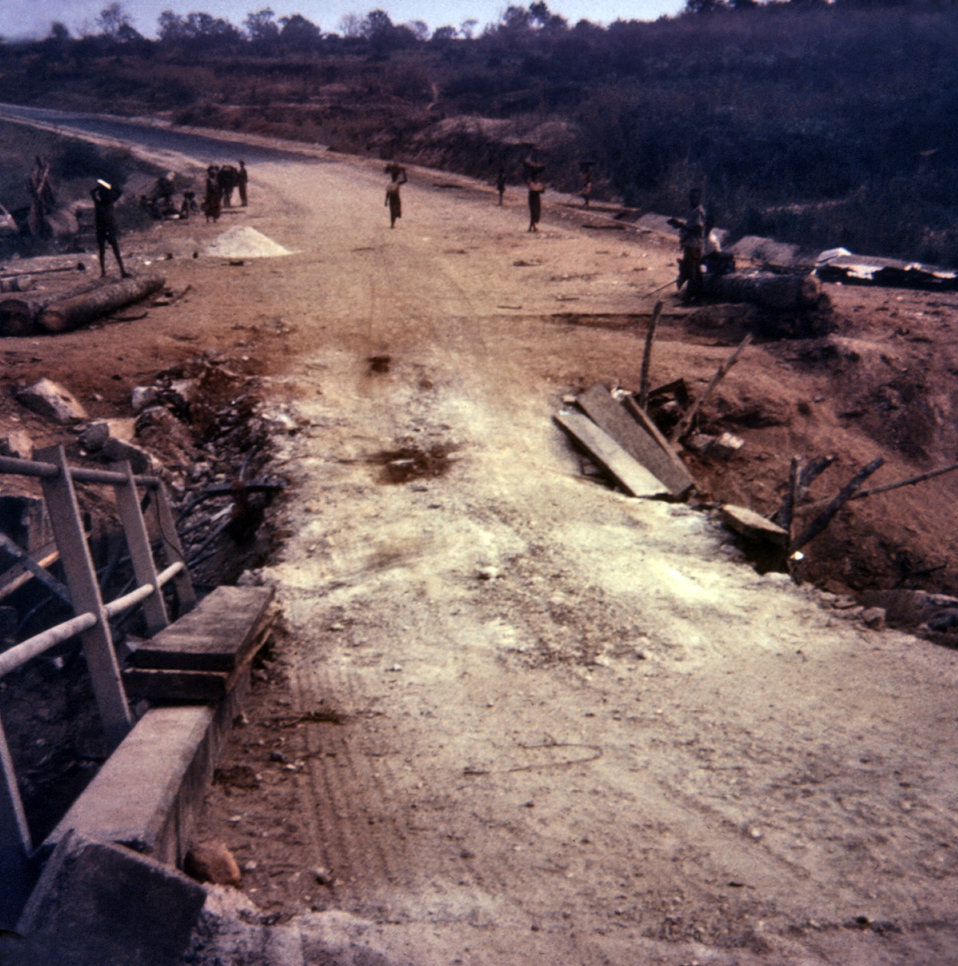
This photograph depicted the treacherous 'roads' in Nigeria after the Biafran war, in which buried land mines had damaged bridges that made it difficult for CDC's EIS officers to move from village to village.